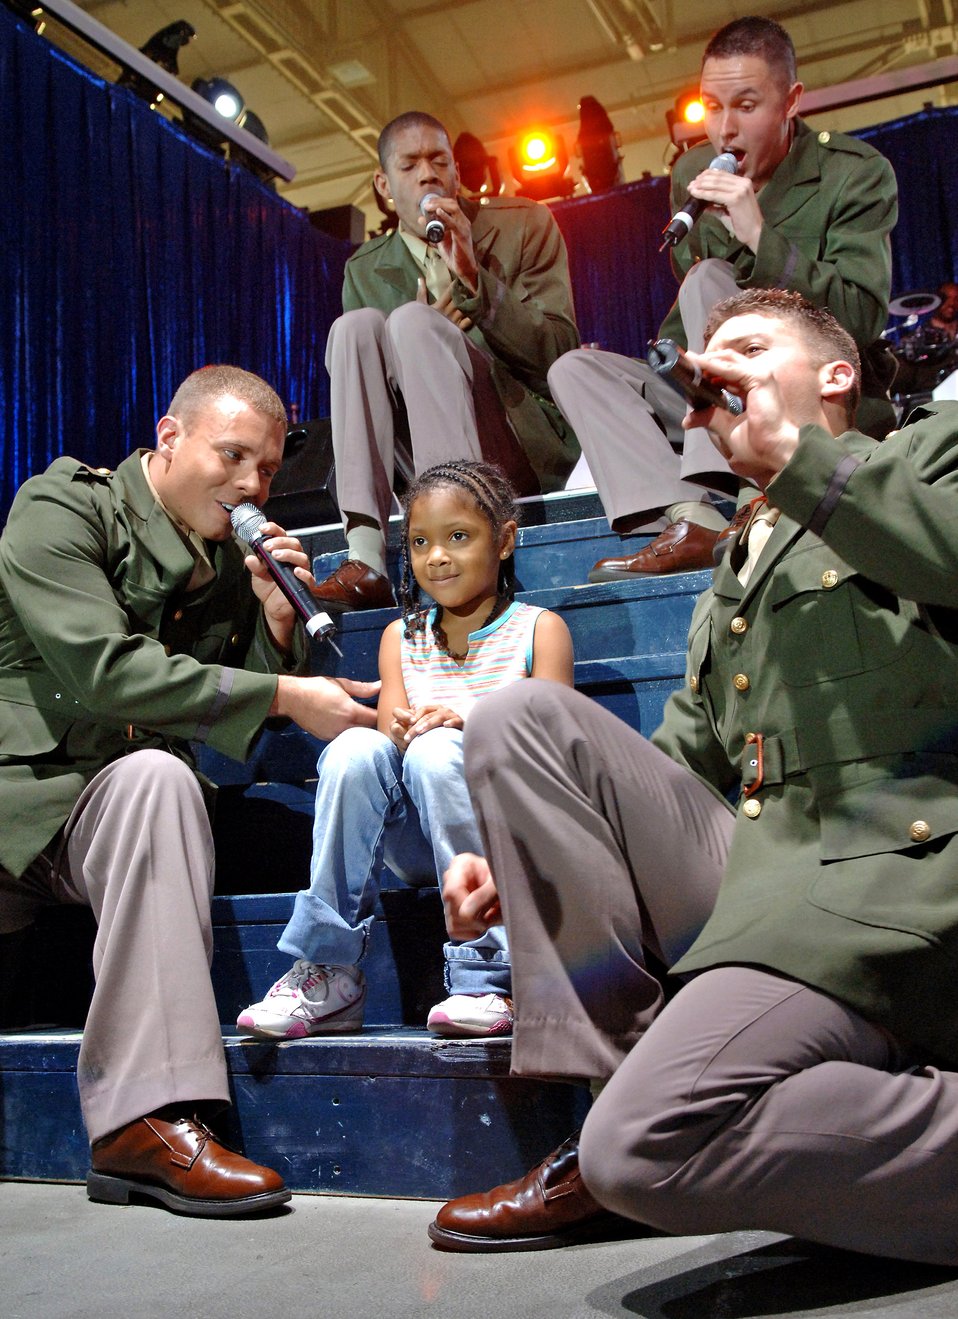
'I only have eyes for you'

A young lady is serenaded by vocalists from Tops in Blue Sept. 25 at Ramstein Air Base, Germany. This year's Tops in Blue performance is titled